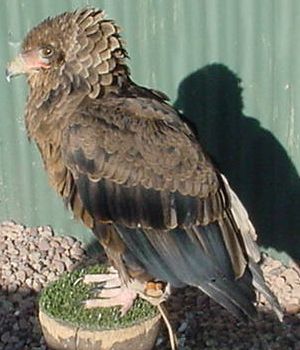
Terathopius ecaudatus, immature. I took this photo